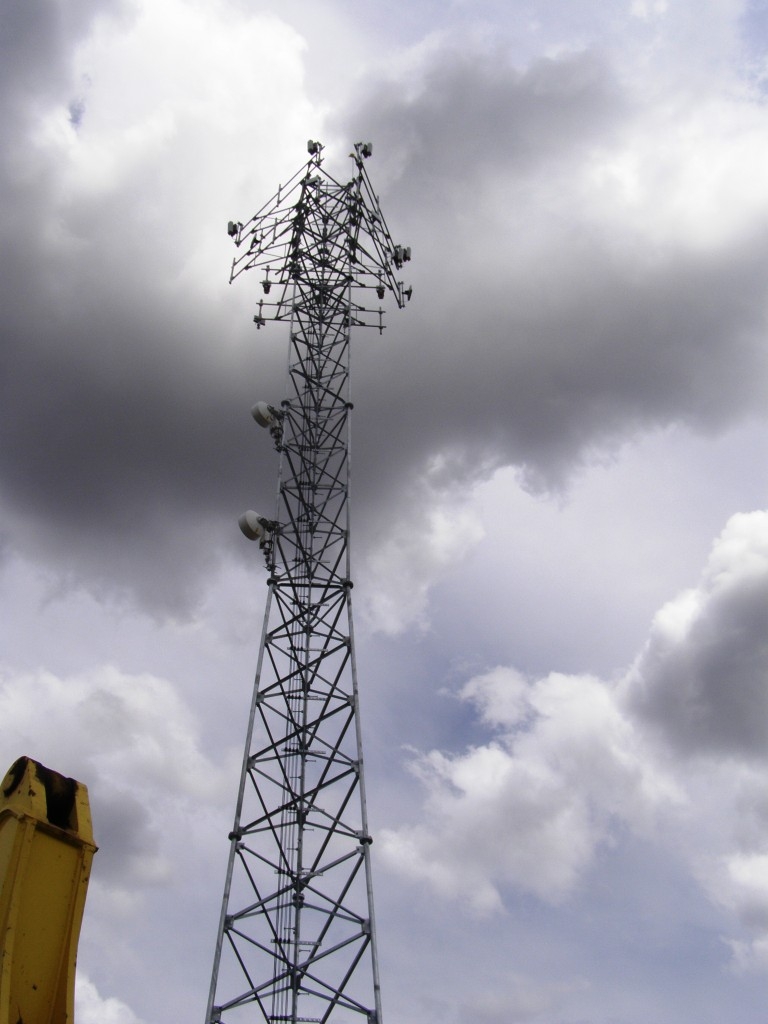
200E Tower antennas